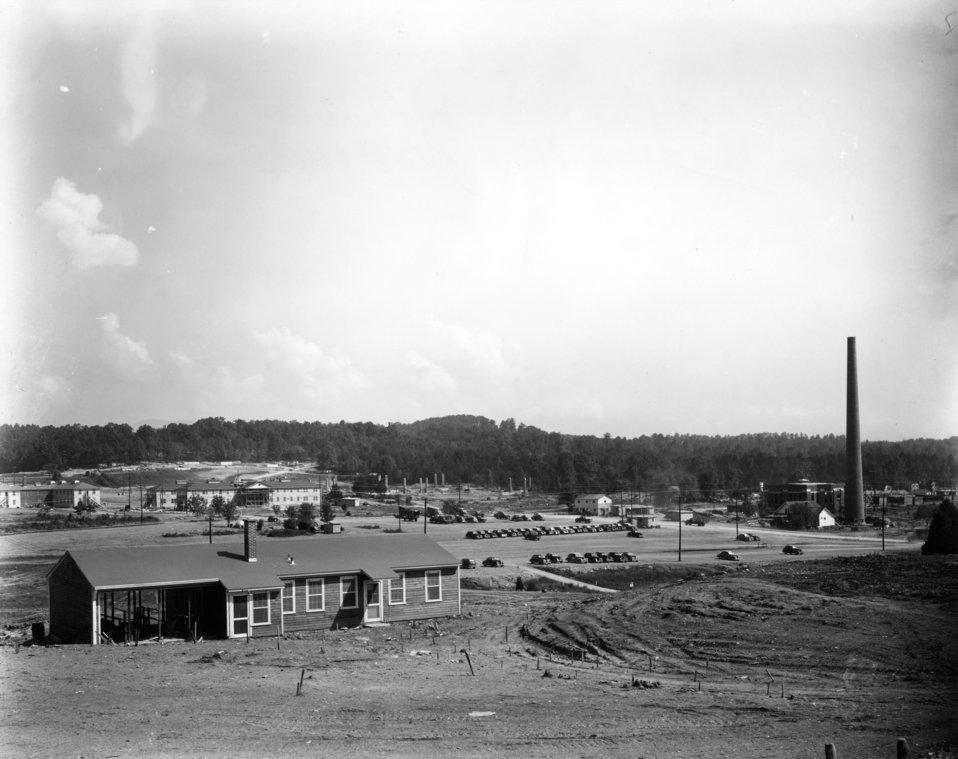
Construction activity at Oak Ridge